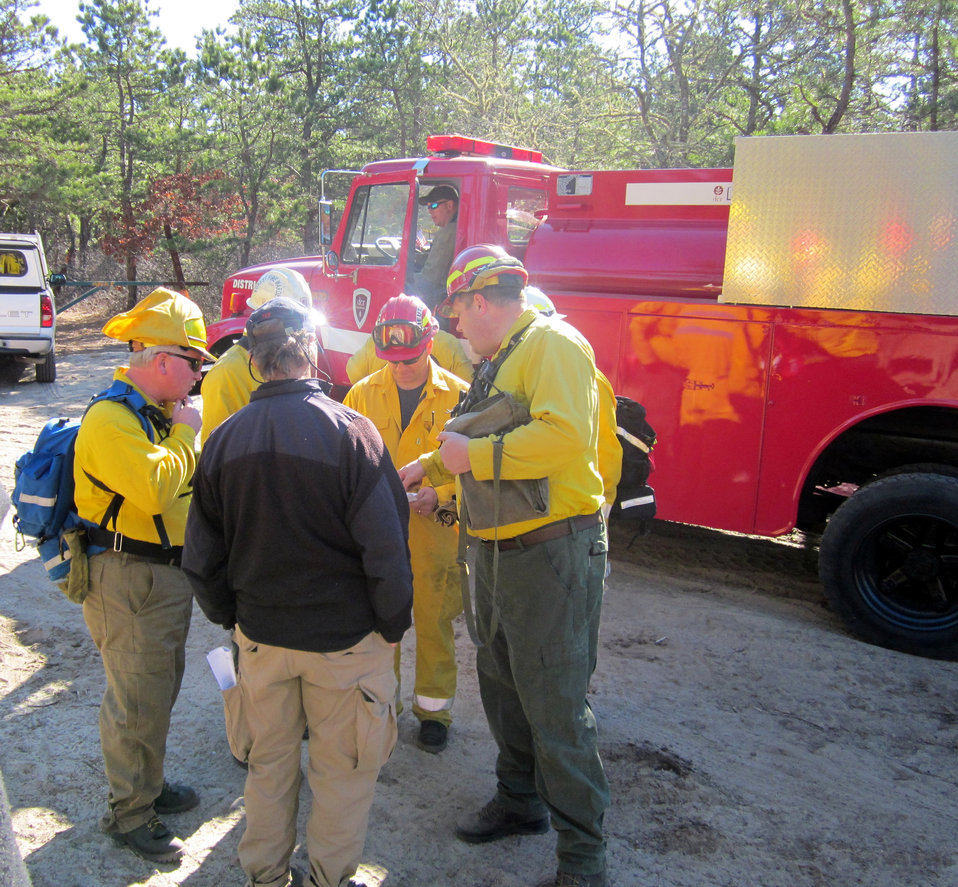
Huddle along DCR Brush Breaker

Mashpee, Massachusetts, April 5, 2012. Burn boss Joel Carlson (right) of Northeast Forest and Fire Managment meets with the burn crew for a controlled burn at the Town of Mashpee Holland Hill Barrens area of Mashpee National Wildlife Refuge. At left is Tom Eagle, Deputy Refuge Manager. The burn reduced fire risk to neighboring homes and improved habitat for the New England cottontail. It was conducted by the Town of Mashpee, U.S. Fish and Wildlife Service, State of Massachusetts Department of Conservation and Recreation, and Northeast Forest and Fire Management.